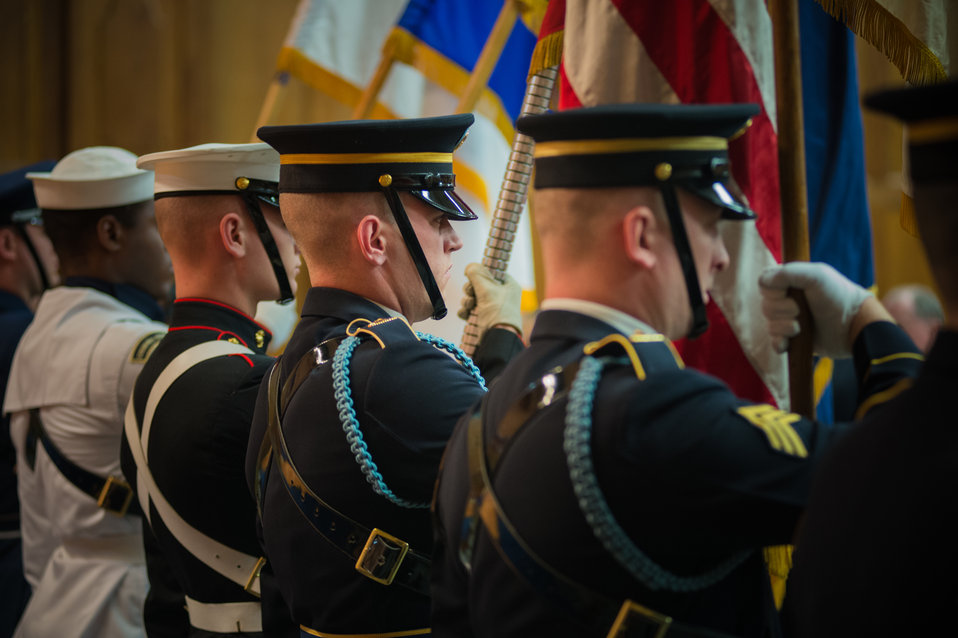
The U.S. Military District of Washington Joint Armed Forces Color Guard presents the colors at the Asian Pacific American Heritage Observance at the U.S. Department of Agriculture (USDA) in Washington, D.C. on Thursday, May 22, 2014.